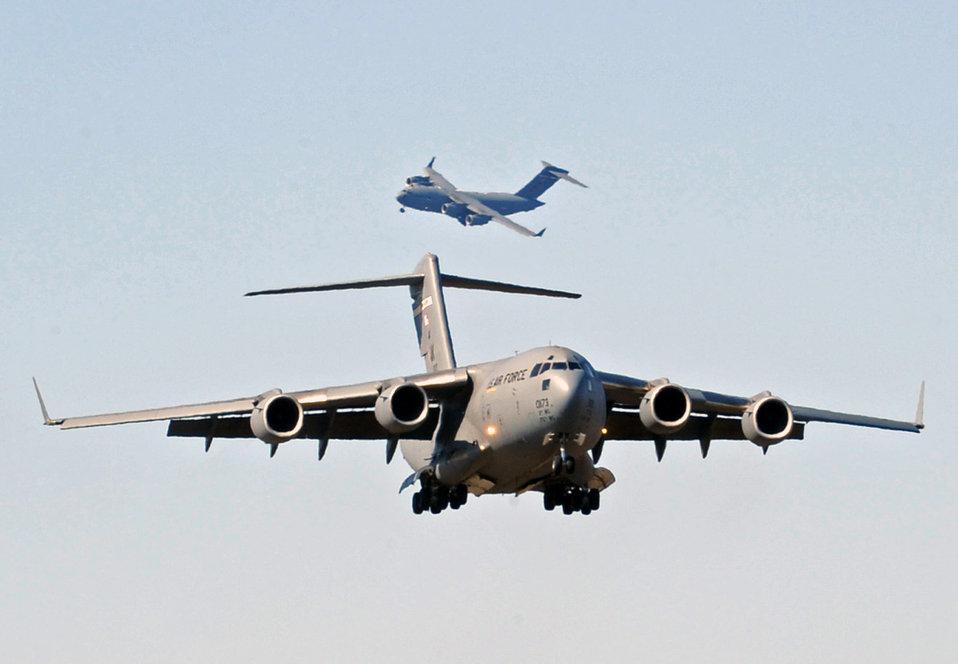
Red Flag-Alaska ends

Two C-17 Globemaster IIIs prepare to land after participating in Red Flag-Alaska 2009 April 30 at Elmendorf Air Force Base, Alaska. This exercise enabled flying squadrons to enhance their fighting capabilities in simulated combat sorties in a realistic threat environment. The 10-day exercise ended May 1.